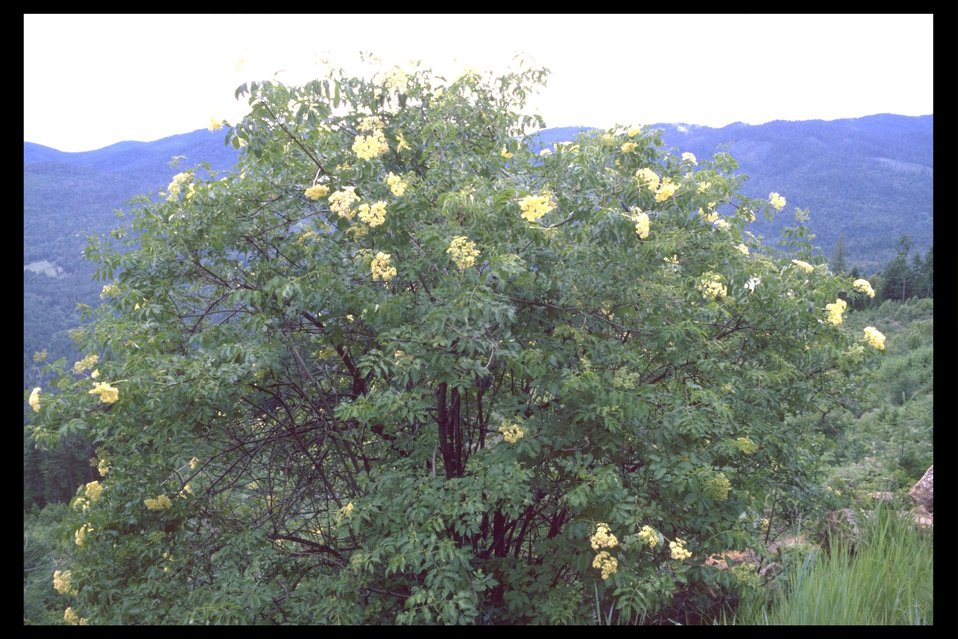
Red Elderberry (Sambucus racemosa) at Upper Trail Creek.